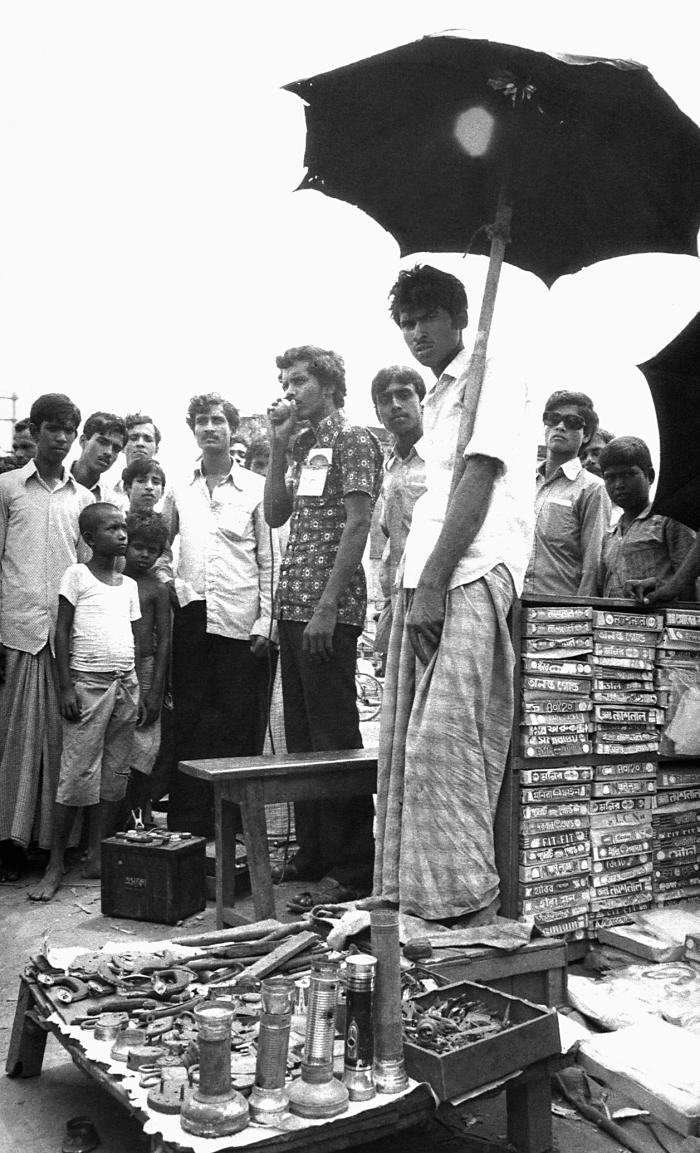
Using a hand-held microphone, this local Bangladesh smallpox eradication team volunteer was photographed as he was announcing the reward that was made available to those who'd report any smallpox cases. Since the marketplace drew such large crowds, it was often a place where capturing the attention of a large group of residents was made easy. If, indeed, a case was reported, from no matter the source, it was investigated fully, and if confirmed as a smallpox case by an epidemiologist, a reward was paid to the informant, no matter the age, and it was subsequently entered into the 'Containment Book'.